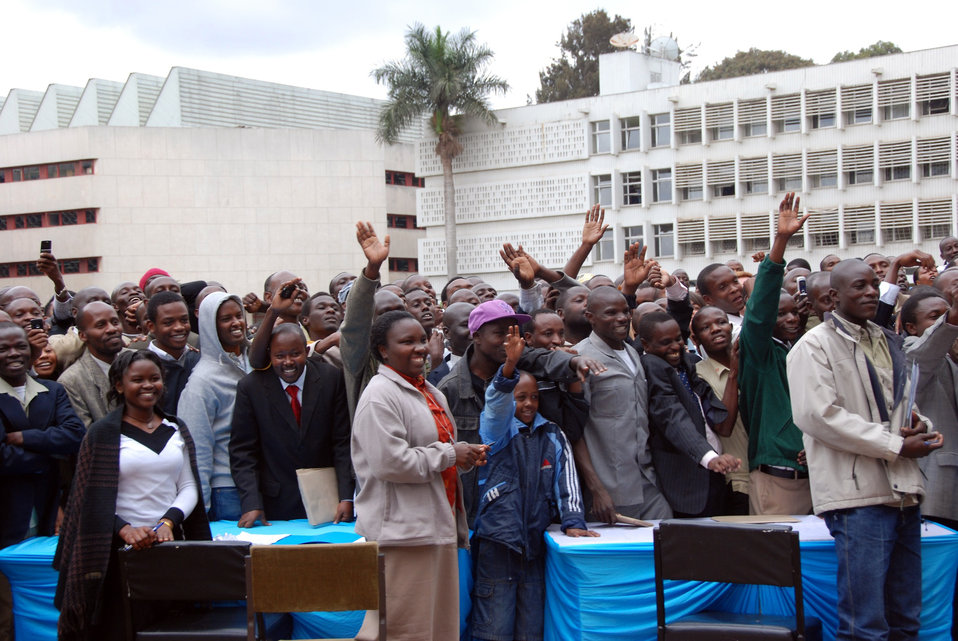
Secretary Clinton Visits Nairobi University

A cheering crowed welcomes U.S. Secretary of State Hillary Rodham Clinton prior to a town hall meeting at the University of Nairobi in Nairobi, Kenya August 6, 2009.